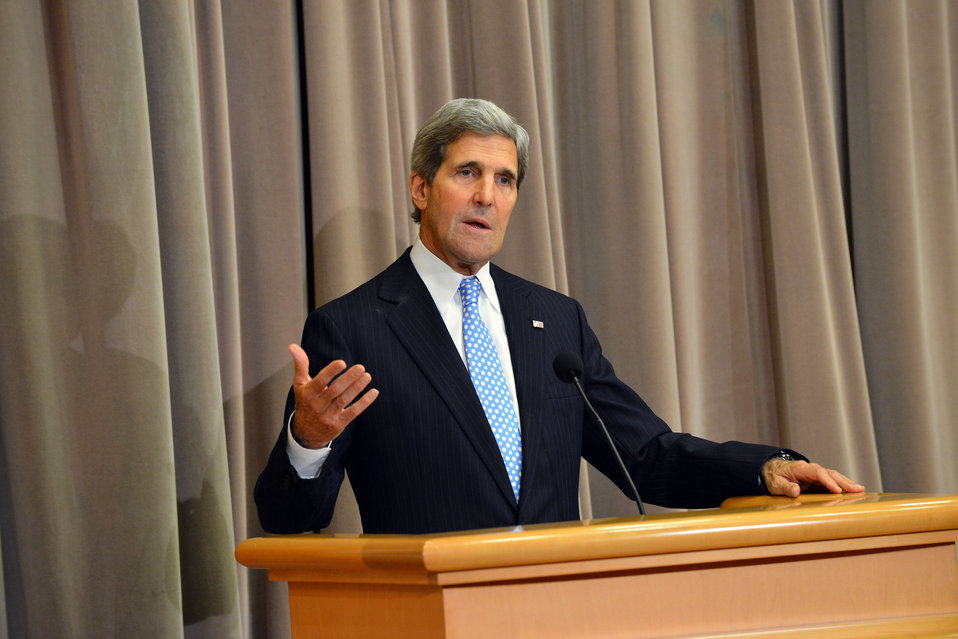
Secretary Kerry Delivers Remarks at the DC Greening Embassies Forum

U.S. Secretary of State John Kerry delivers remarks at the DC Greening Embassies Forum in honor of National Energy Action Month, at the U.S. Department of State in Washington, D.C., on October 29, 2013.